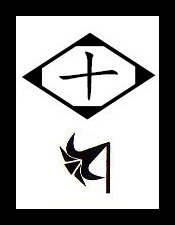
Español: Insignia y logo de escuadron shinigami de Bleach